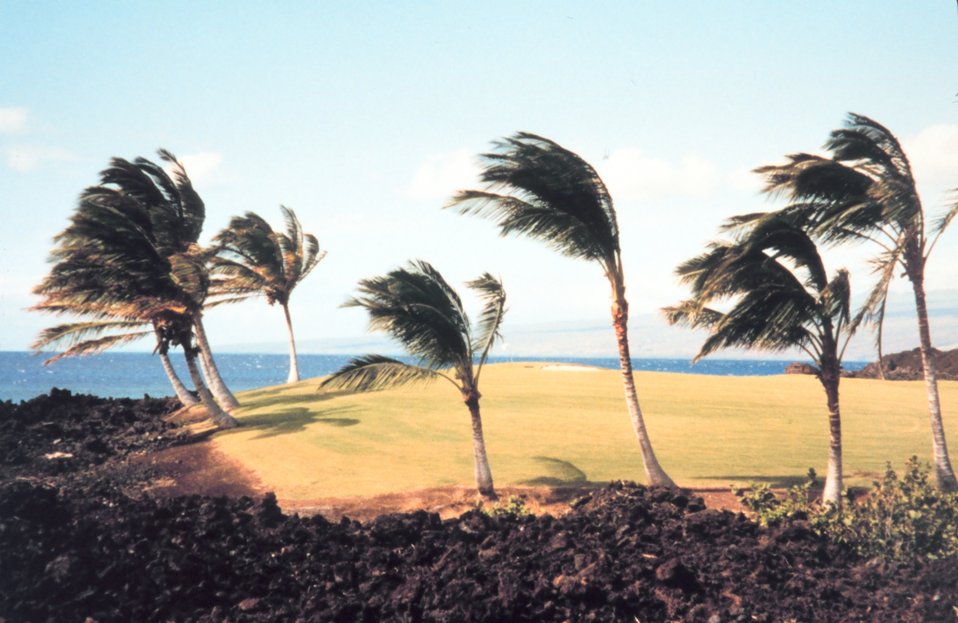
Golf course on the Kona coast. Palm trees moulded by direction of prevailing trade winds.